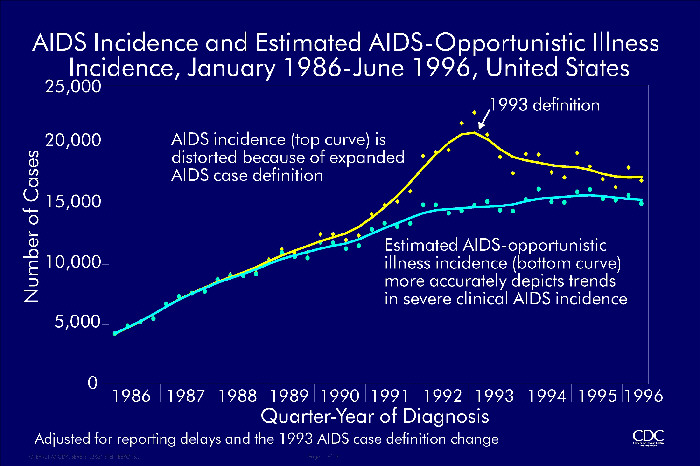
AIDS Incidence and Estimated AIDS-Opportunistic Illness Incidence